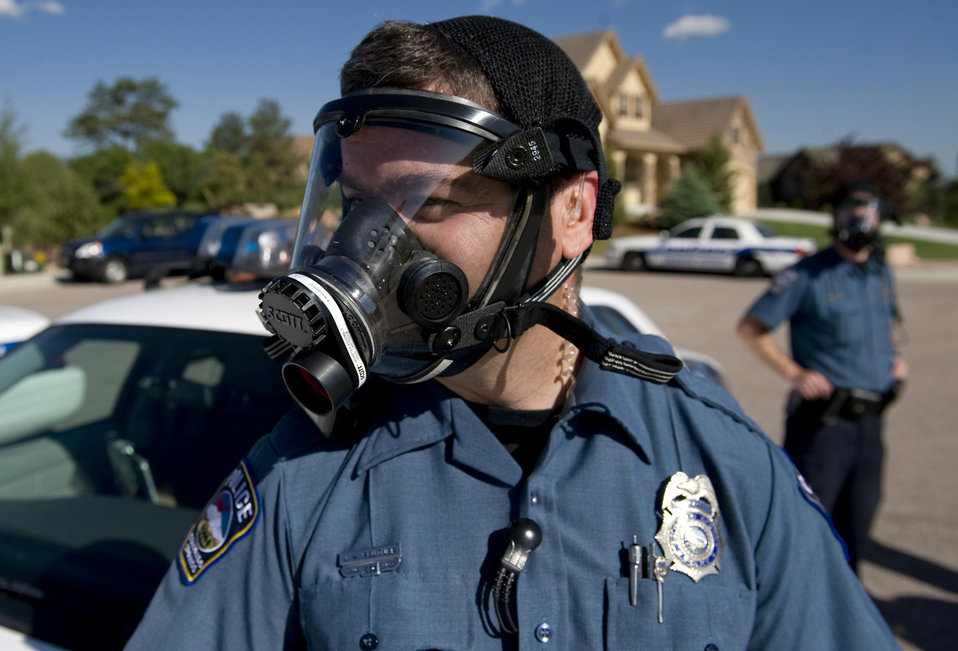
Coalition Warrior Interoperability Demonstration

First responders from the Colorado Springs Police Department don gas masks after being notified of a potential chemical release during the Coalition Warrior Interoperability Demonstration June 16, 2010, in Colorado Springs, Colo.